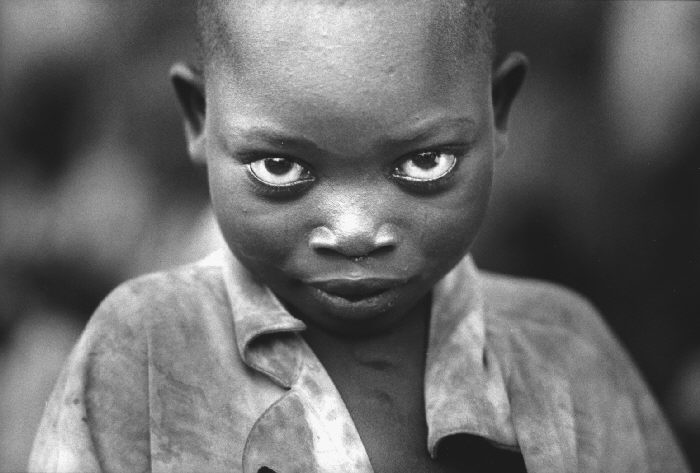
Child with guinea worm, Changeshu Village, Ghana.